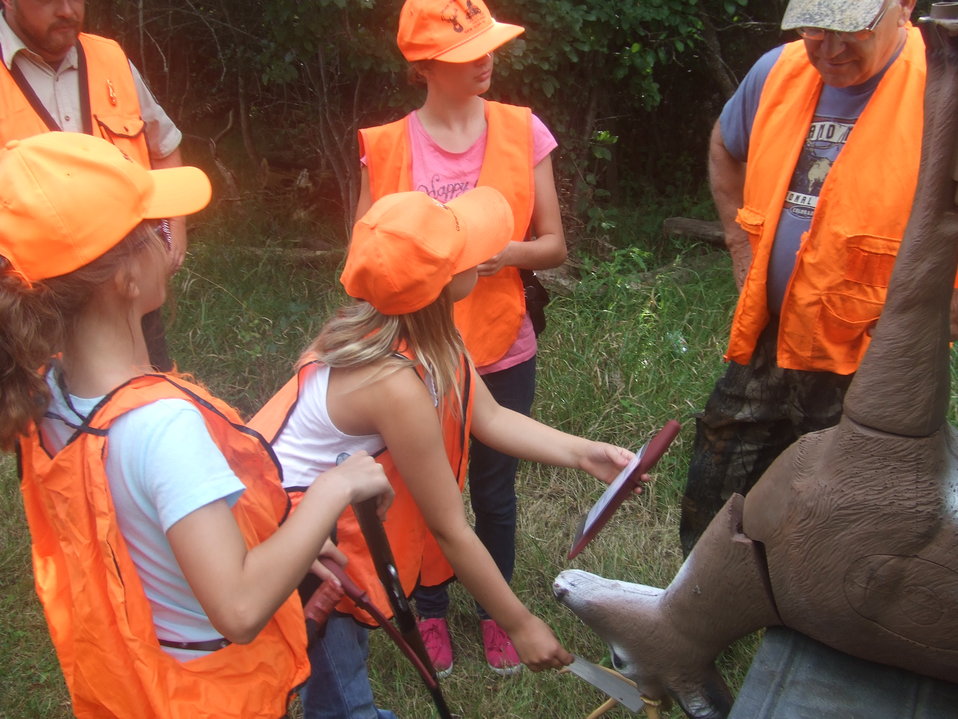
2011 Greenwing Day - Game Warden scenario session

Des Lacs National Wildlife Refuge, Tasker's Coulee

She says the tag doesn't match your license!